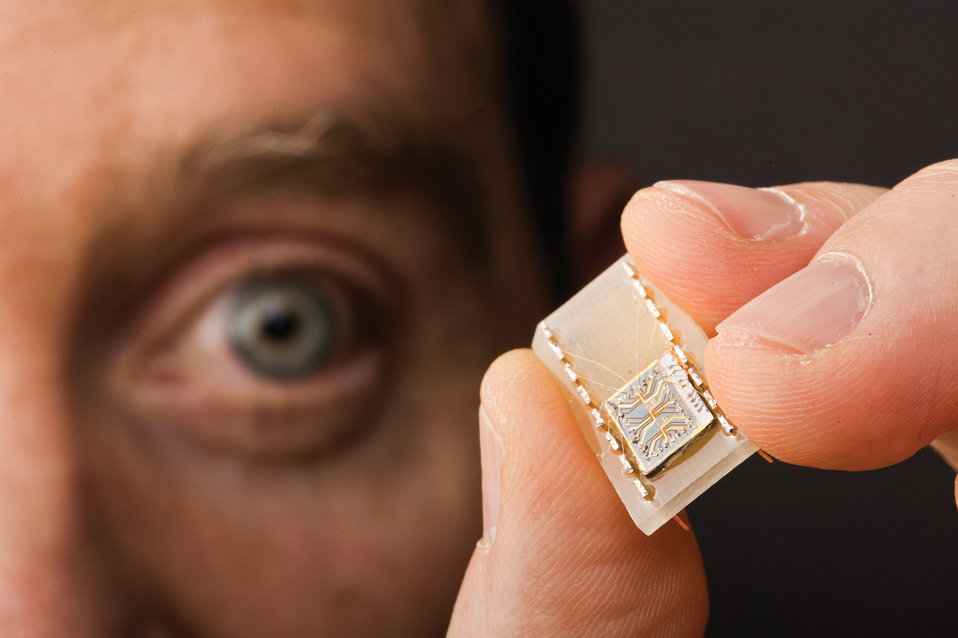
Nanowire voltages at Sandia National Laboratory.

Sandia researcher Mike Lilly observes two individually powered nanowires, embedded one above the other, in a few atomic layers of Sandia-grown crystal. The unique test device already has yielded new information about nanoworld electrical flows.